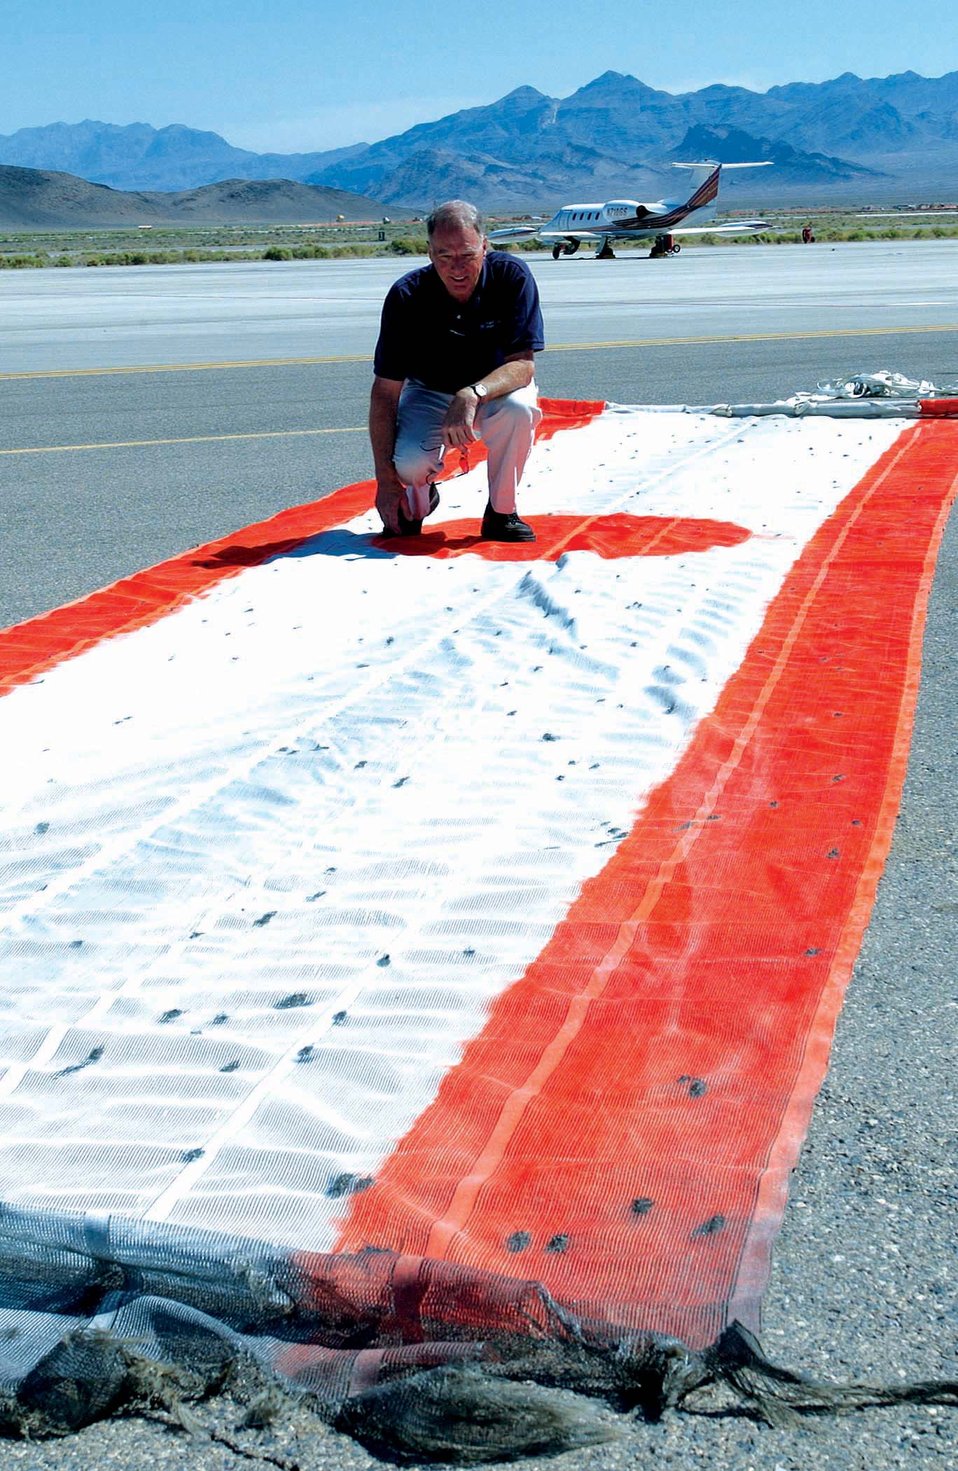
Hitting the mark

NELLIS AIR FORCE BASE, Nev. -- Retired Lt. Col. Jim Pressick counts the number of holes shot into a banner used for target practice by F-15 Eagle pilots during a training exercise May 20 over the Nevada Test and Training Range near here. The banner was pulled behind a plane Colonel Pressick flew to give pilots air-to-air gunnery training. The banner was shot 422 times.